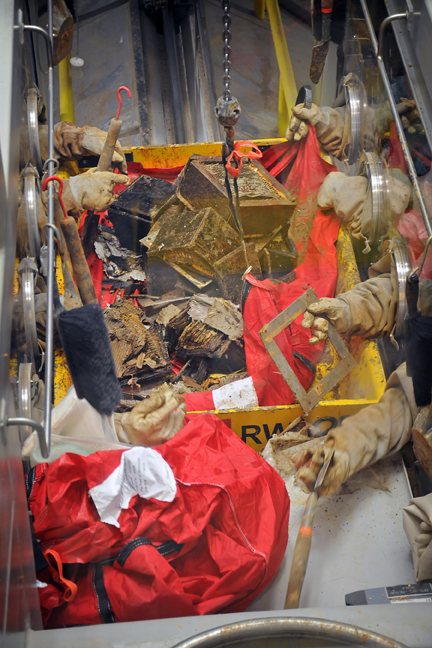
Recovery Act funds buried waste exhumation at Idaho Site’s Pit 9

Workers sort through exhumed waste in a glovebox, or shielded enclosure, to repackage it for future shipment off site.